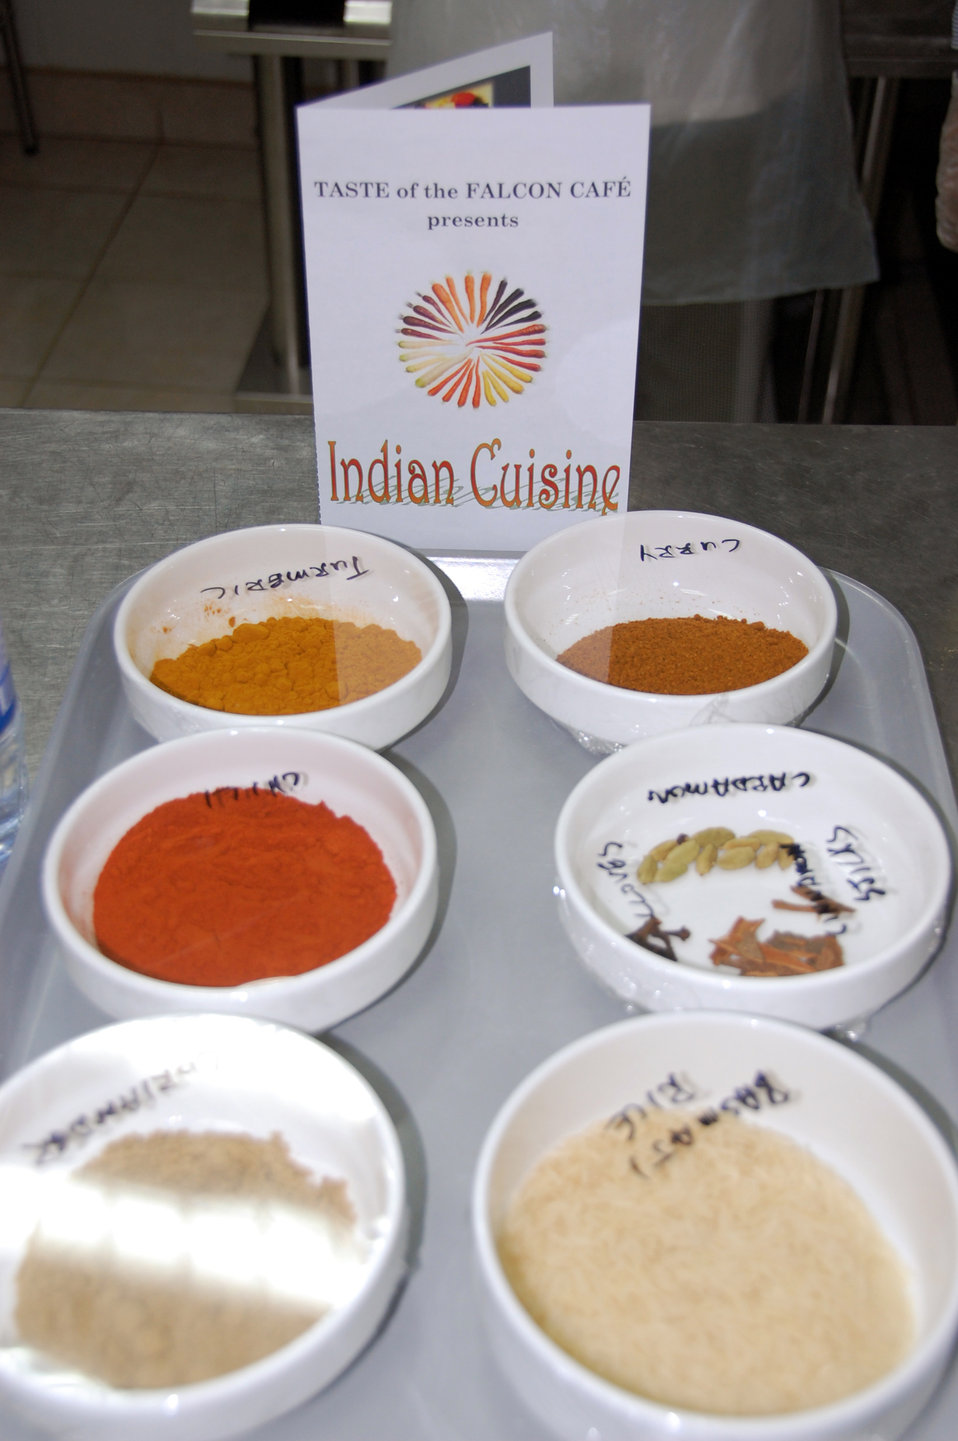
Airmen get first-hand insight to favorite meal

Ingredients are displayed on the counter for four Indian food recipes during a cooking class April 6, 2010, at the Flacon Cafe at an air base in Southwest Asia. The class, taught by the cafe staff, was open to those 387th Air Expeditionary Group Airmen working at the base.